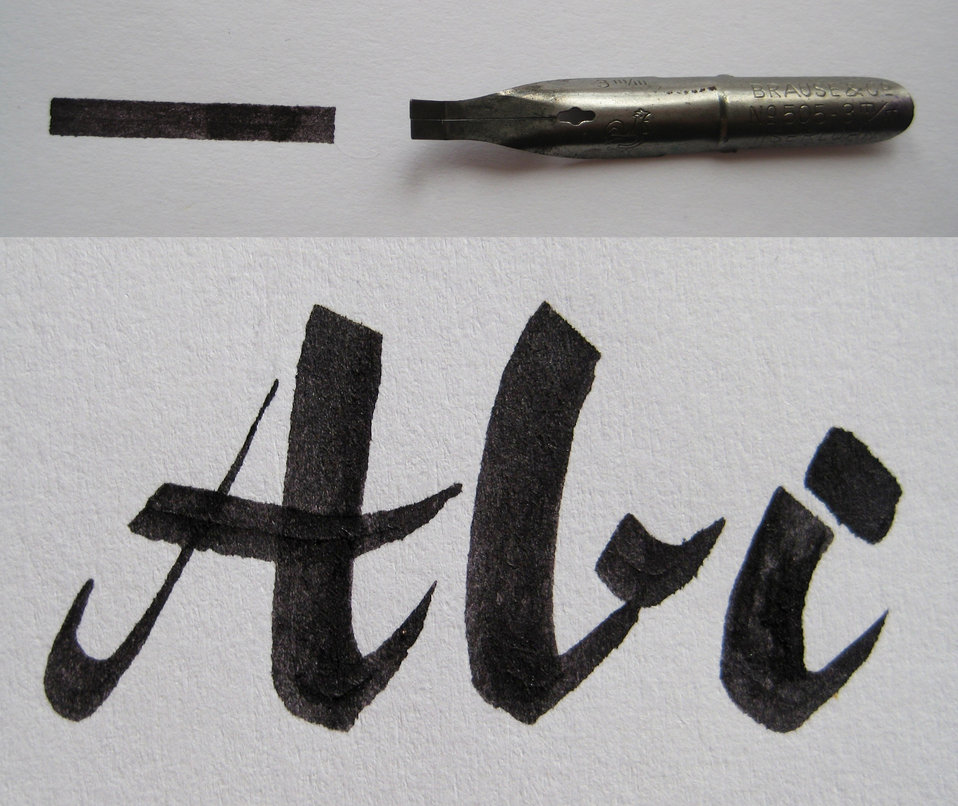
Deutsch: Rechteckplattenfeder mit Strich und Schriftbeispiel